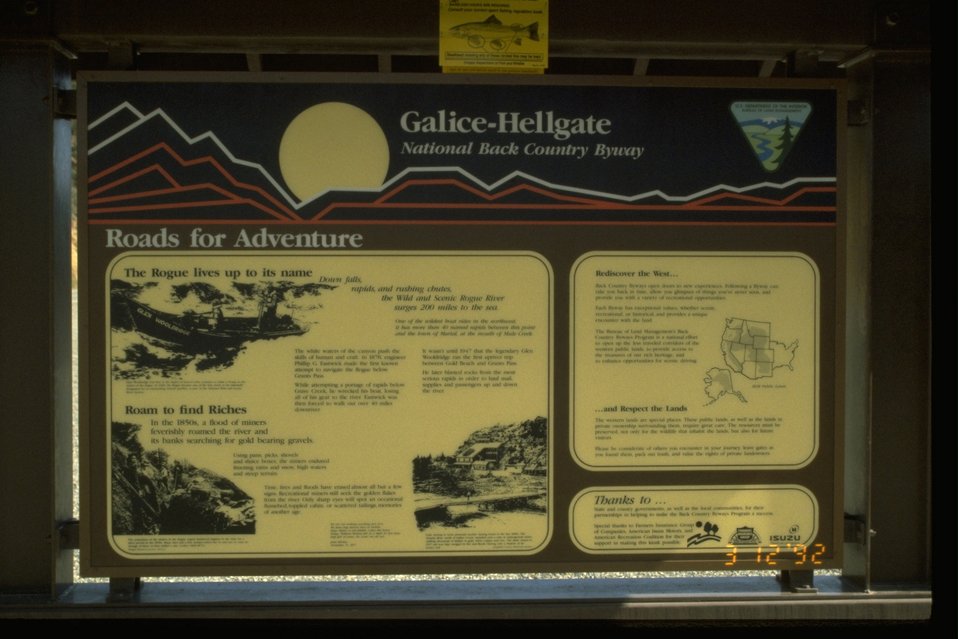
Byway panel on the Galice/Hellgate Byway.